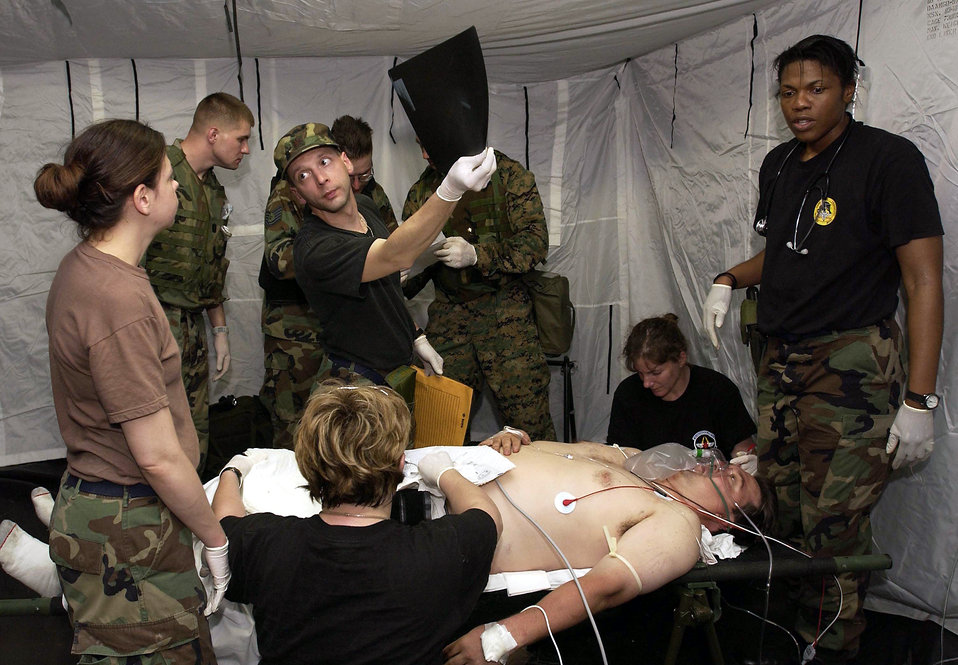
Airmen in Haiti

PORT-AU-PRINCE, Haiti -- Airman with the 43rd Aeromedical Evacuation Squadron stabilize the condition of a civilian reporter with a neck wound March 7. The Airmen are assigned to Pope Air Force Base, N.C.